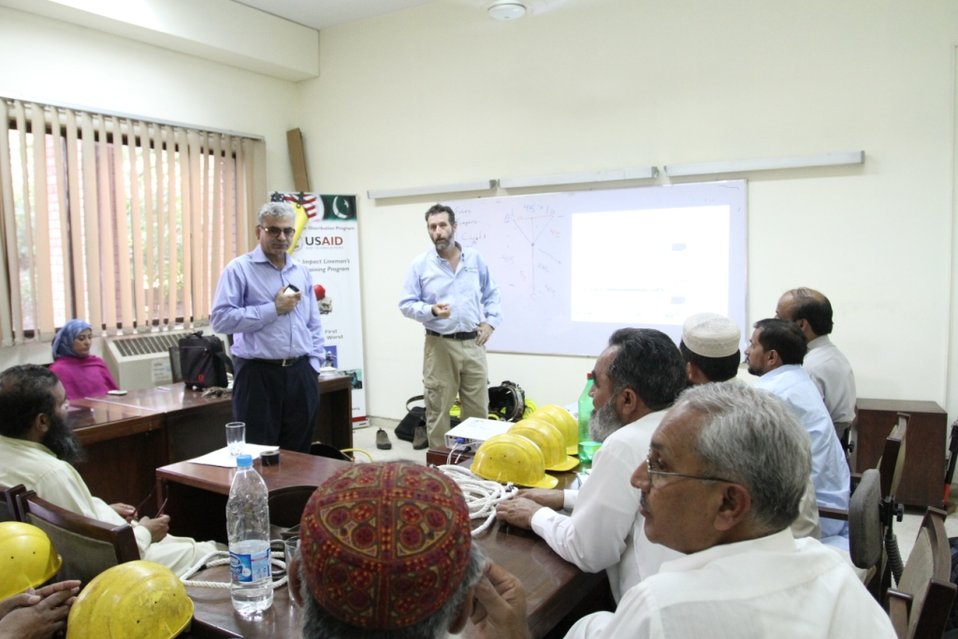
Quick Impact Safety Training Program for IESCO

Islamabad, May 21, 2012: The United States Government through the United States Agency for International Development (USAID) “Quick Impact Lineman Training Program” will help in save thousands of linemen in Pakistan. At the concluding session of today’s training program held at the WAPDA Staff College, the deputy chief of party of USAID’s Power Distribution Program officially handed over linemen safety tools to distribution companies including the Islamabad Electric Supply Company (IESCO), Multan Electric Power Company (MEPCO), and Hyderabad Electric Supply Company (HESCO). USAID has provided safety trainings to over 415 linemen and will provide training to thousands more in the coming months.